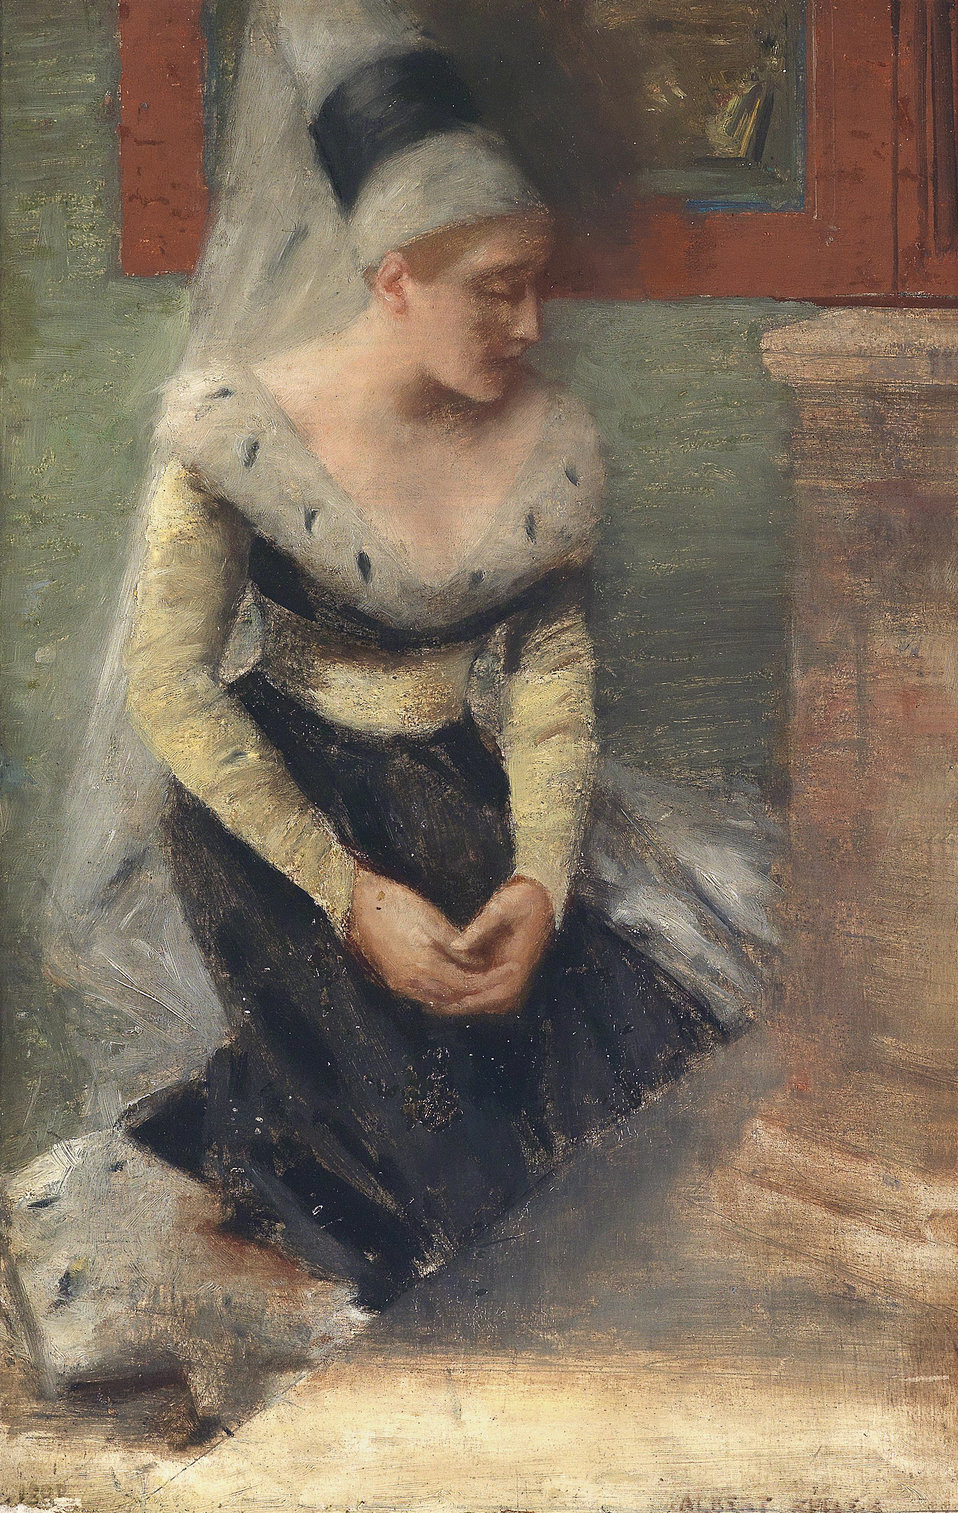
Albert von Keller Burgfräulein